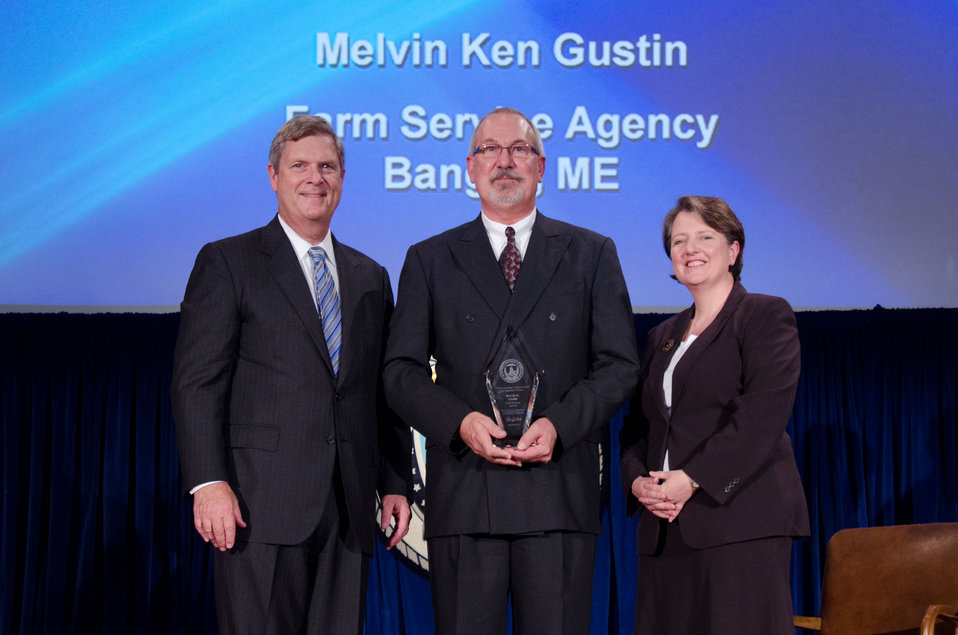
Agriculture Secretary Tom Vilsack (l) and Deputy Secretary Kathleen Merrigan (r), presents the Award for Personal and Professional Excellence to Marvin K. Gustin, Farm Service Agency, Bangor, ME. For outstanding performance in delivery of programs to the agricultural produces of Maine and for exemplary training provided to FSA employees through out New England. On Wednesday, September 14, 2011 in the Jefferson Auditorium at the US Department of Agriculture in Washington, DC.